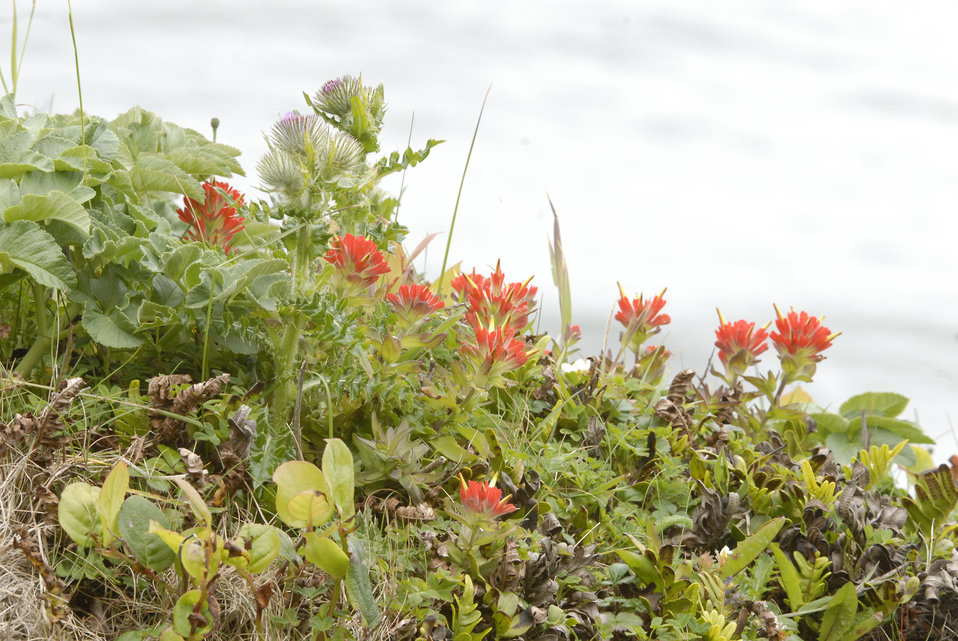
Orange hawkweed is an invasive weed with orange-red flowers growing along Oregon’s coastal area near Florence, Oregon on June 10, 2008. Orange hawkweed displaces native vegetation and can dominate pastures, lawns and roadsides and it is unpalatable to livestock. . A species is considered invasive it is nonnative to the ecosystem and its introduction causes or is likely to cause economic or environmental harm or harm to human health. The goal of the U.S. Department of Agriculture’s (USDA) Forest Service (FS) invasive species program is to reduce, minimize, or eliminate the potential for introduction, establishment, spread, and impact of invasive species across all landscapes and ownerships.